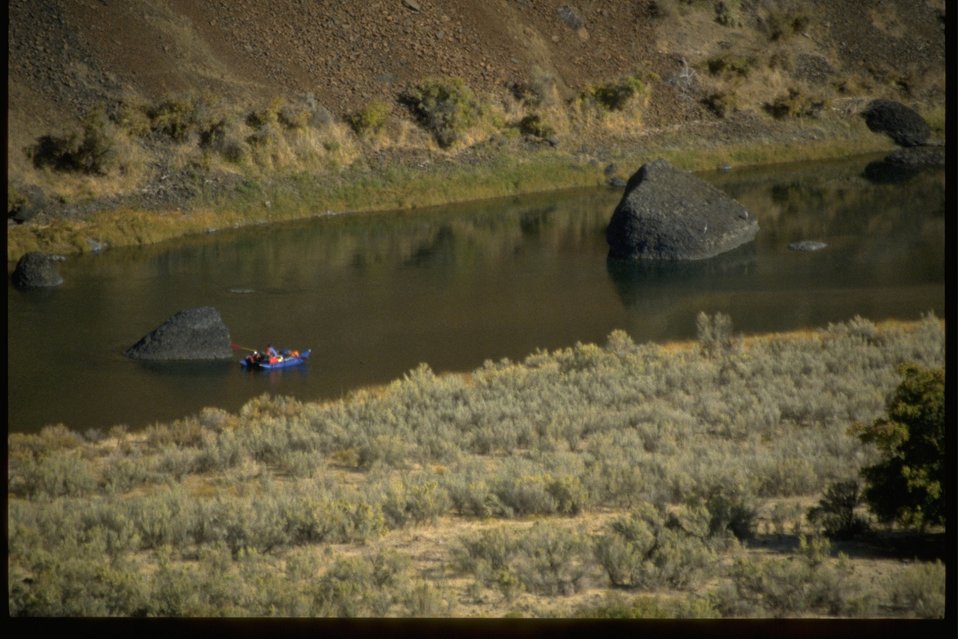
Photo in a seven series collection of a rafter on the John Day River. Approaching a large rock island with 2 heron perched.